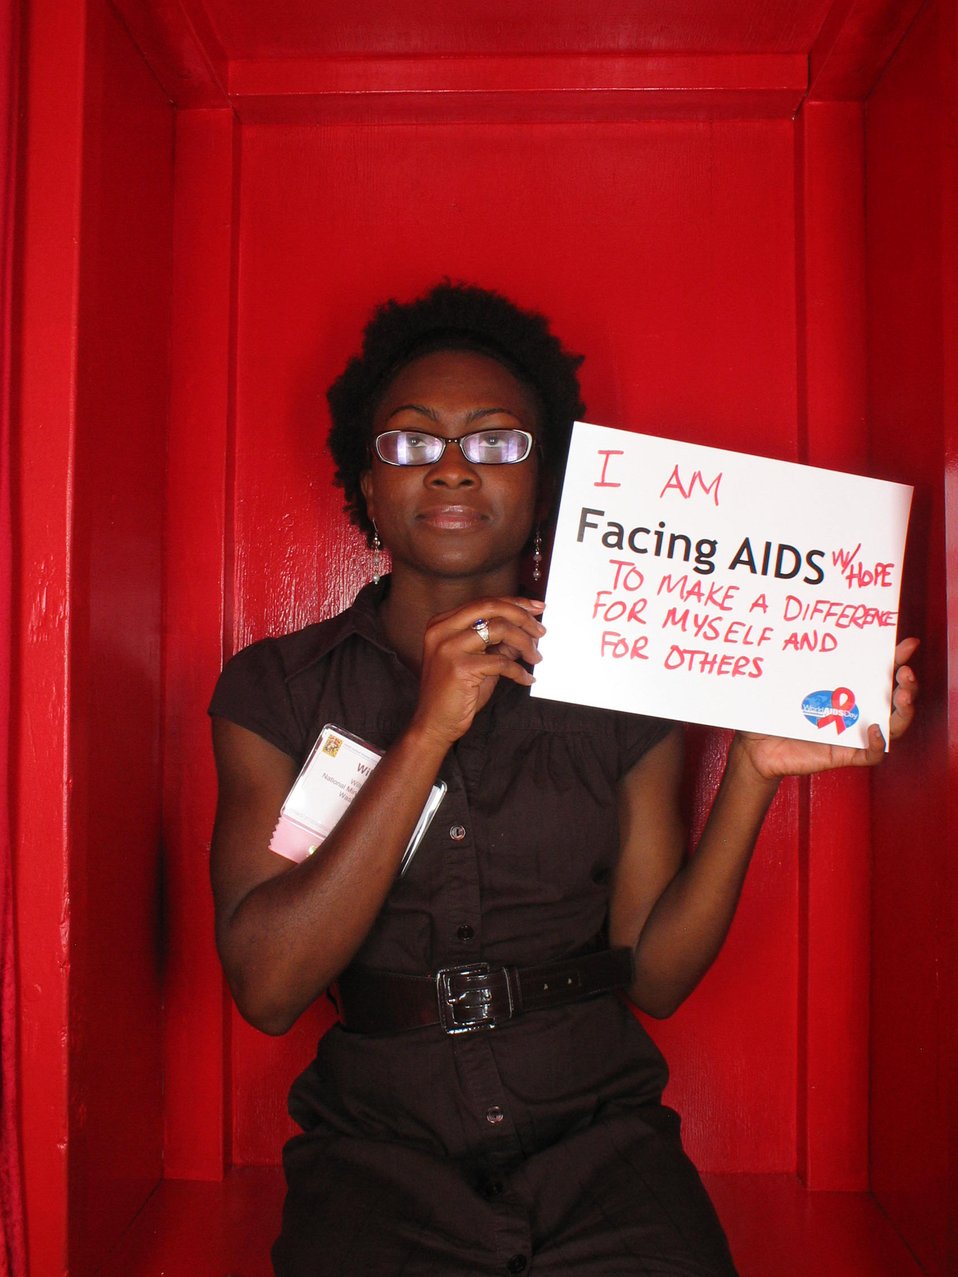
I am Facing AIDS with hope to make a difference for myself and others.